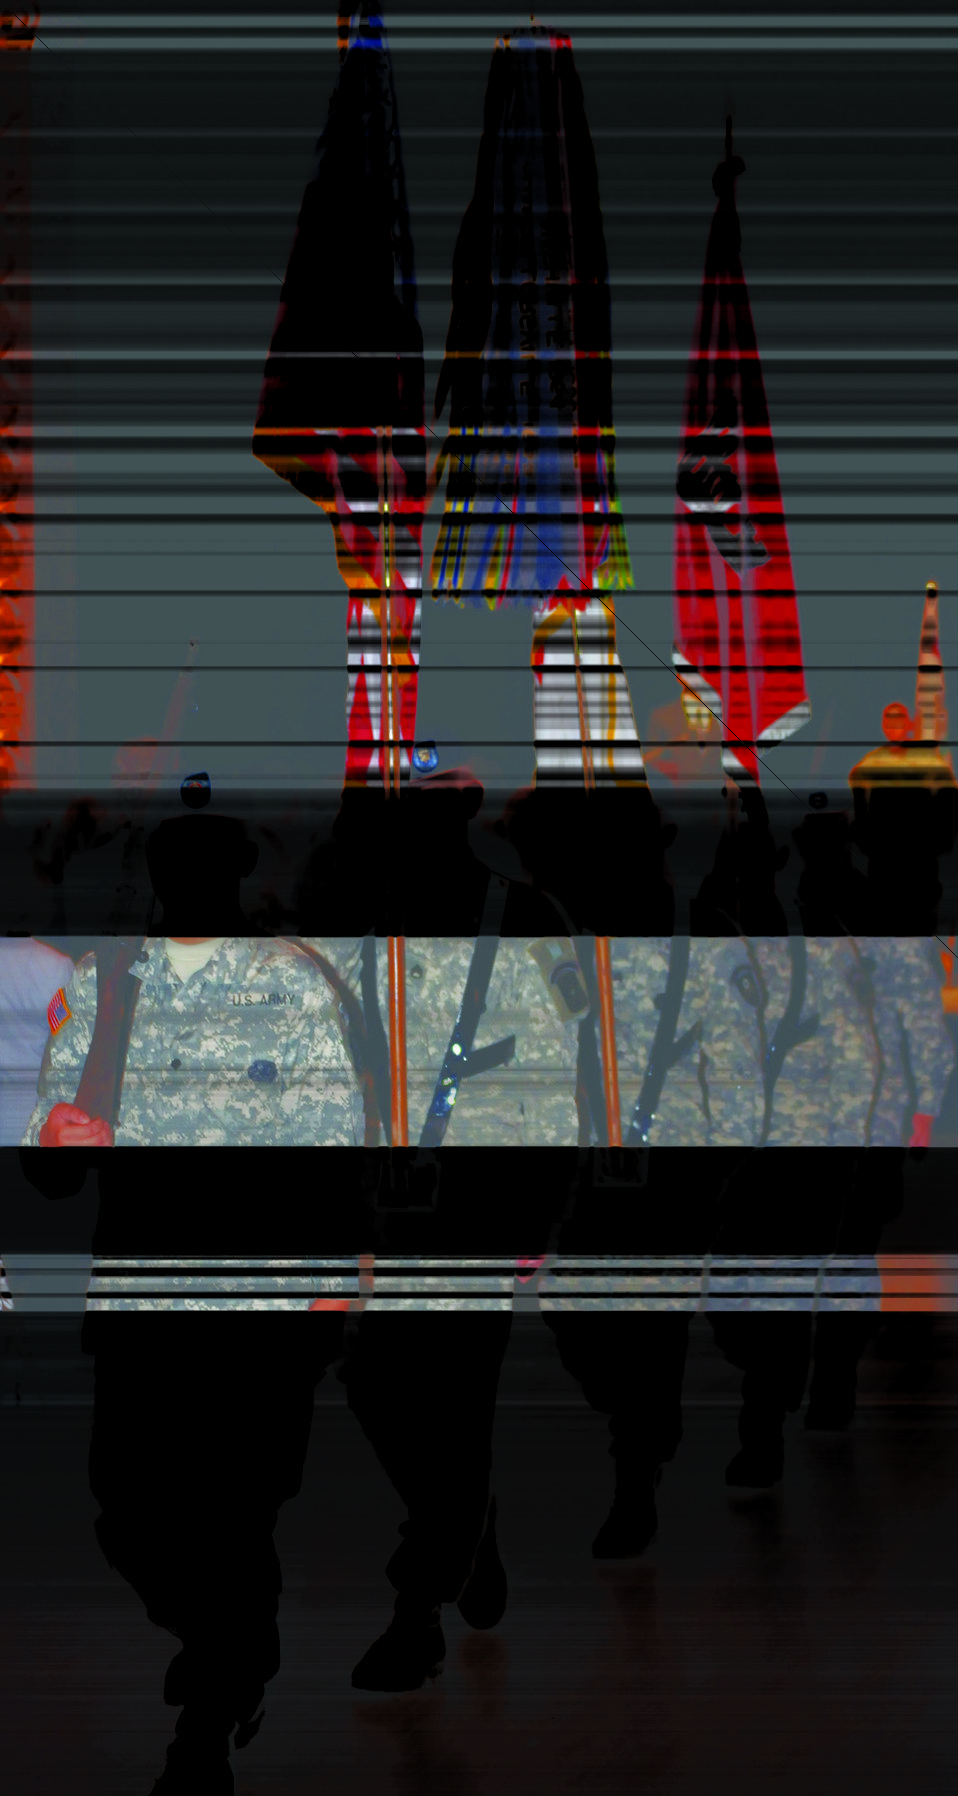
California National Color Guard

The California National Guard Color Guard carry the national colors during the U.S. Army Corps of Engineers Sacramento District's change of command ceremony. The ceremony was held at the Sacramento Memorial Auditorium in Sacramento, Calif., July 27.